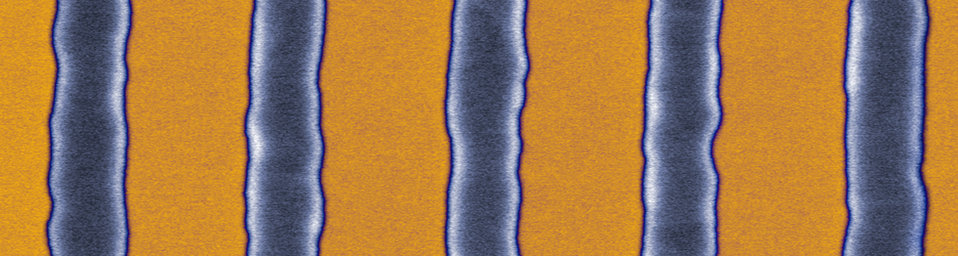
Nanoscale Line Roughness

A colorized scanning electron microscope image shows the 'waviness' or roughness of edges on reference lines made of silicon that are about 100 nanometers wide.